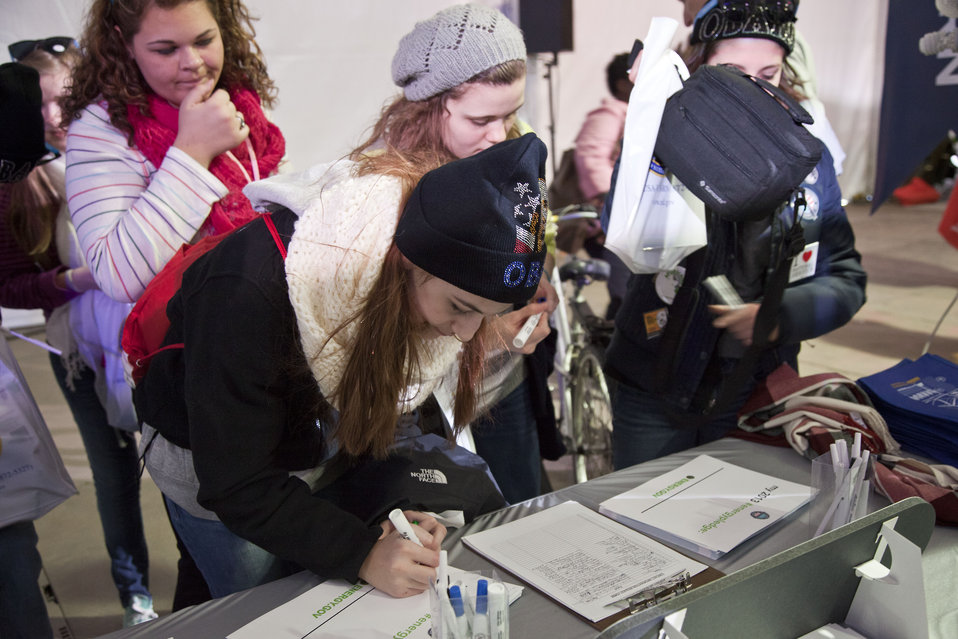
What's your #energypledge?